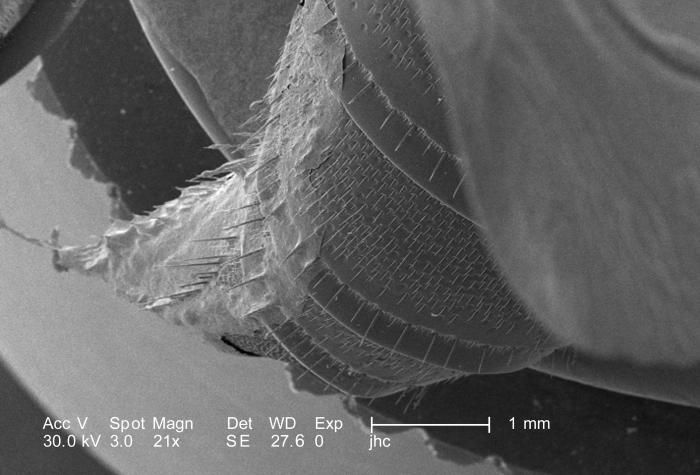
Under a very low magnification of only 21X, this scanning electron micrograph (SEM) depicted some of the anatomical morphology found at a point on an unidentified hornet where its chitinous abdominal exoskeletal plates were seen overlapping proximally to its distal tip. This hornet was found in the suburbs of Decatur, Georgia.